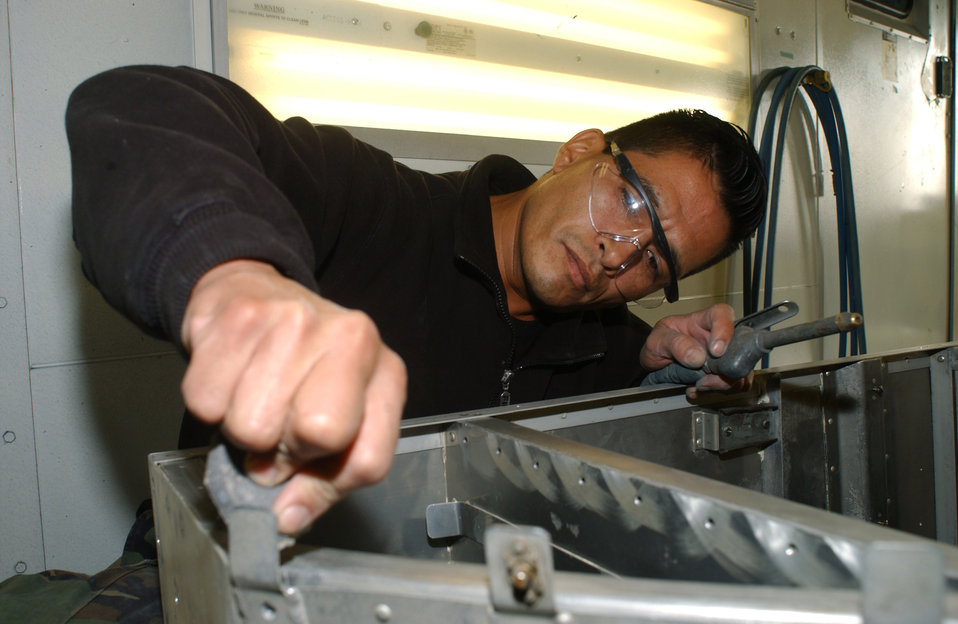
New kitchen

MOFFETT FEDERAL AIRFIELD, Calif. -- Staff Sgt. Daniel Castro prepares a C-130 Hercules kitchen galley for new paint here recently. Sergeant Castro is a fabrication specialist assigned to the 129th Maintenance Group.